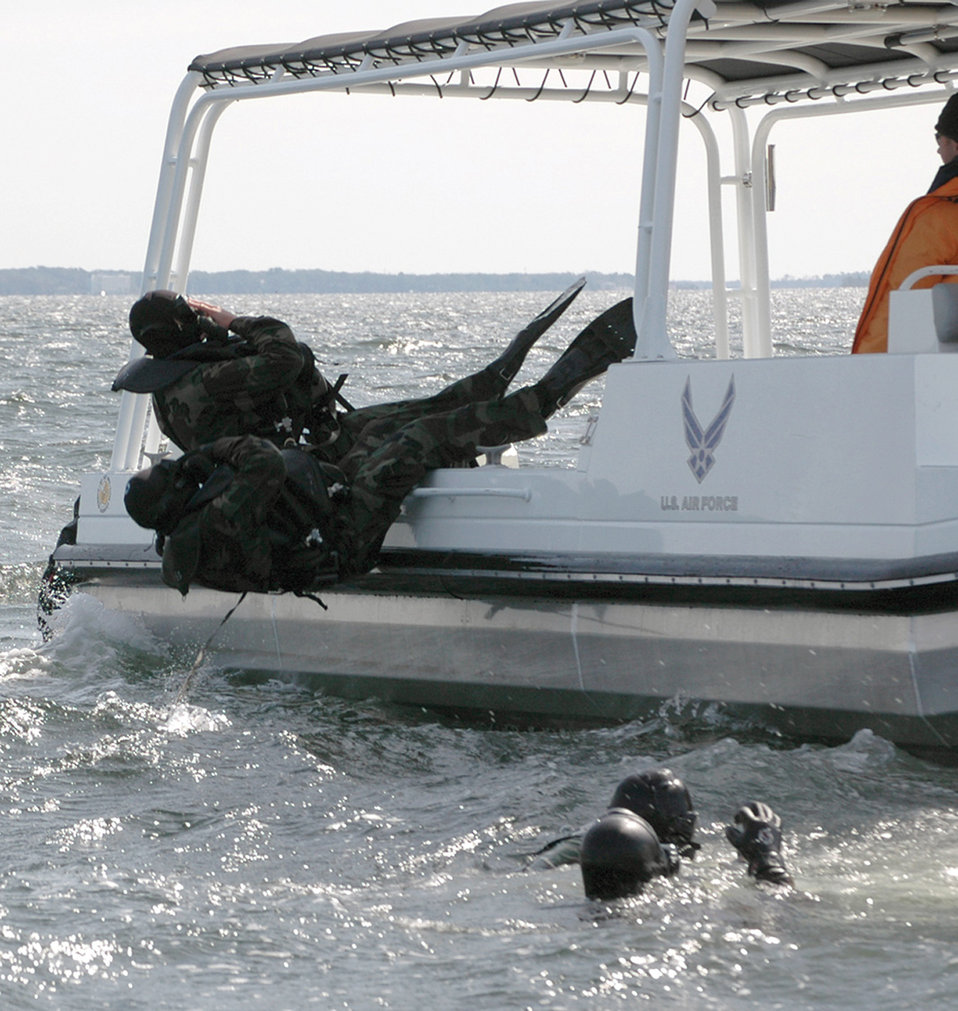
Combat Dive Course students dive backward from their boast to submerge into the Gulf waters.